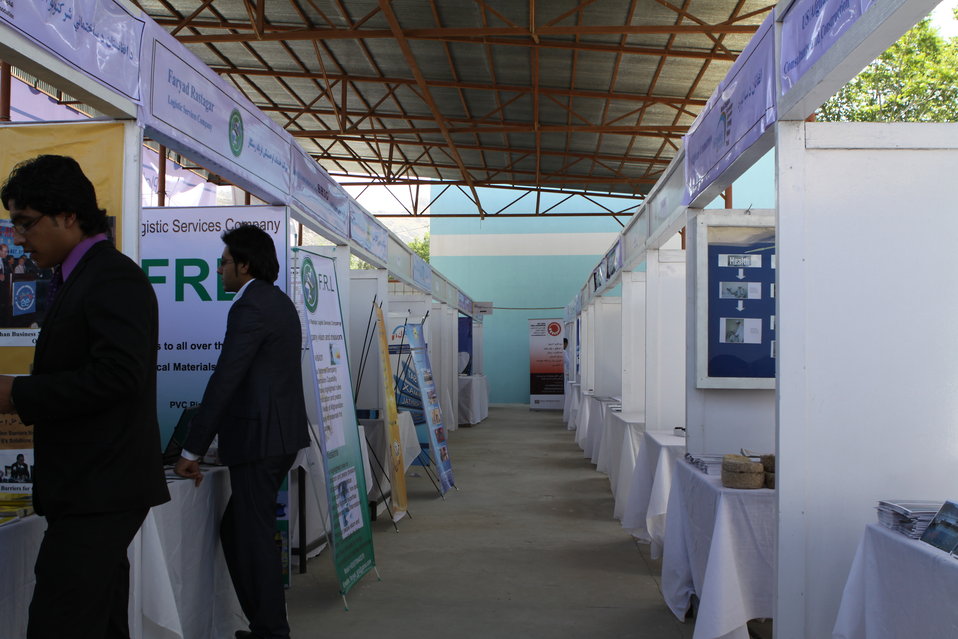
100522 ATVI Graduation 014